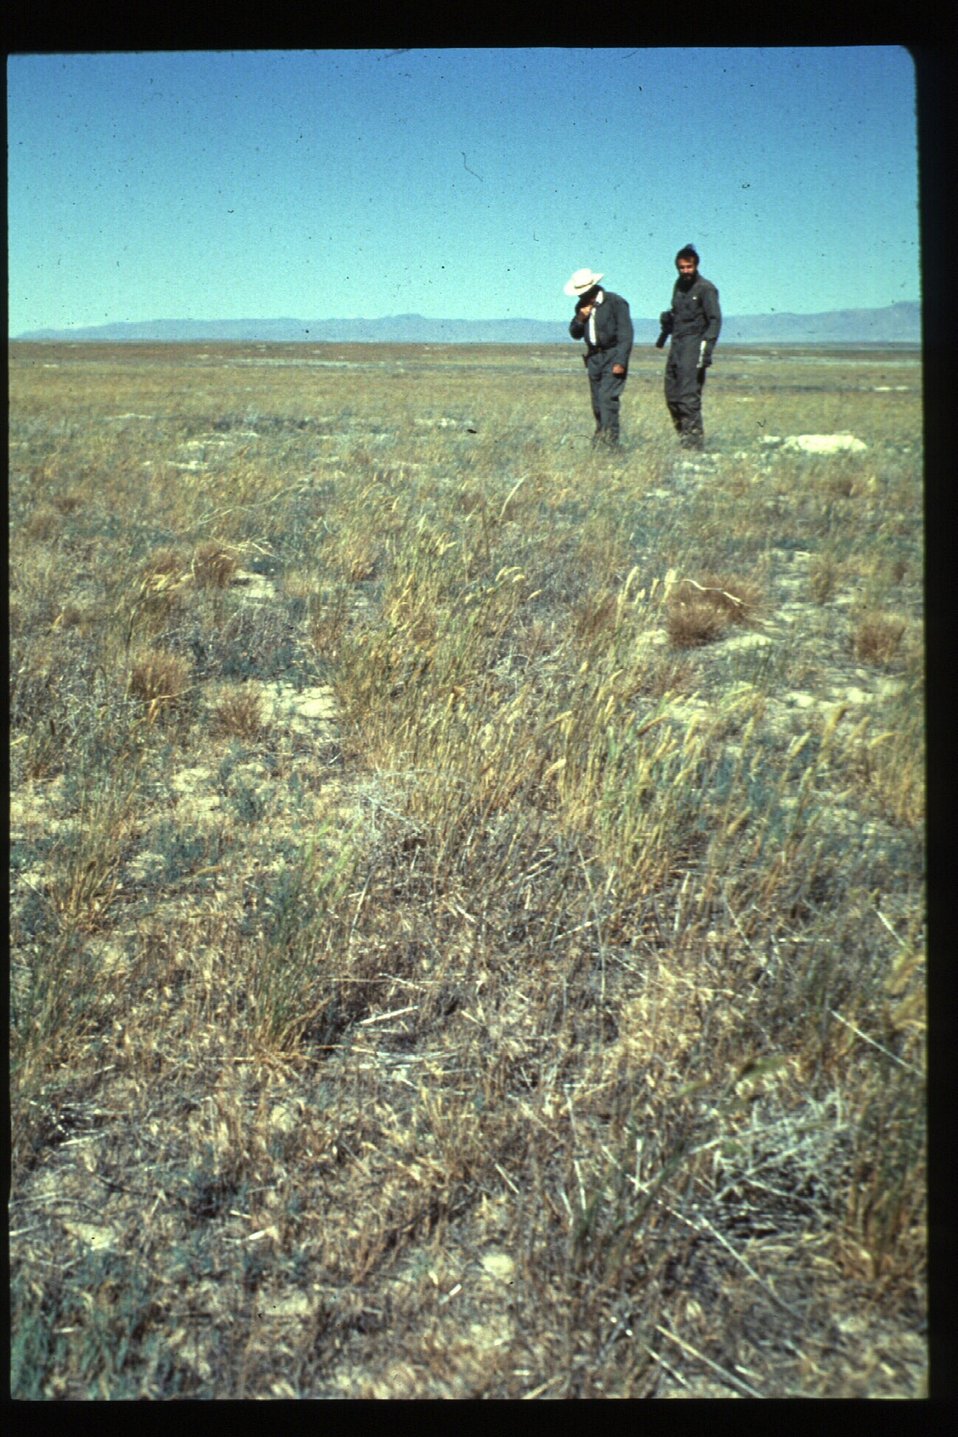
Birds of Prey National Conservation Area BOP NCA Owyhee Field Office LSRD Lower Snake River District